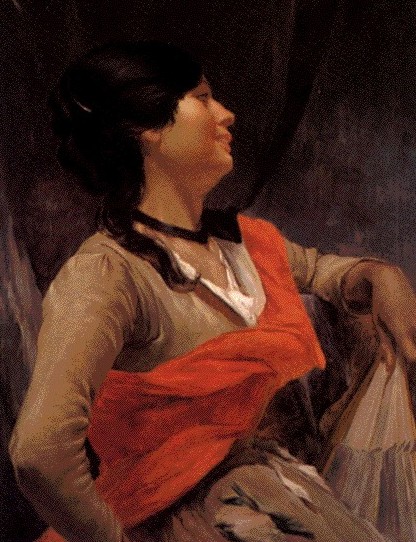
Español: sevillana